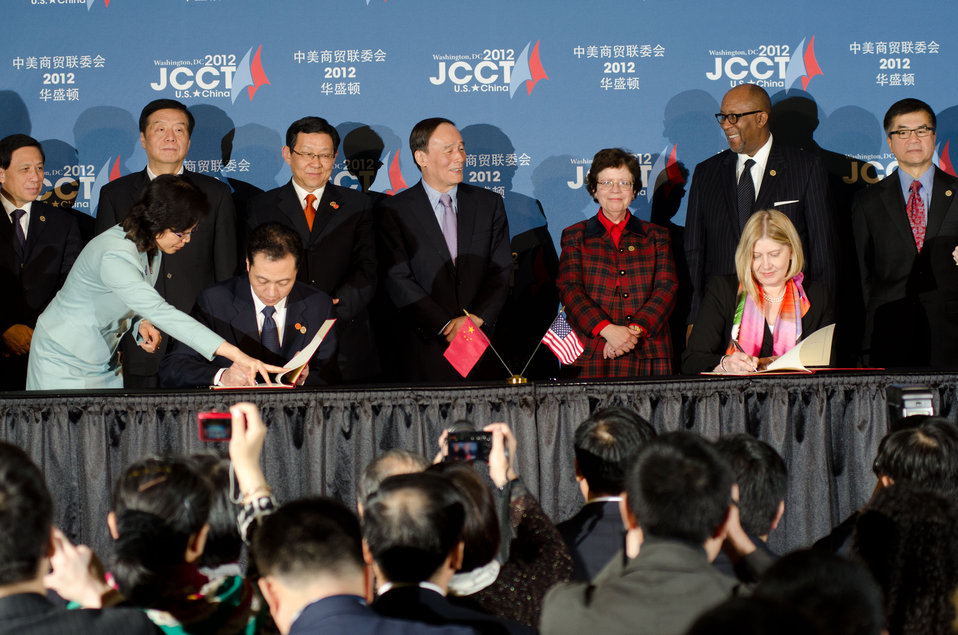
Chinese Ministry of Commerce Vice Minister Wang Chao (left) and U.S. Trade and Development Agency Acting Director Leocadia Zak (right) exchange the signed Memorandum of Understanding between the U.S. Trade and Development Agency and the Ministry of Commerce of the People’s Republic of China in Support of U.S.-China Trade Cooperation, with the support of with the support of principal leaders from the Chinese delegates and U.S. hosts, (L to R) China’s Ambassador to the U.S. Zhang Yesui, Vice Minister of Industry and Information Technology Liu Lihua, Chinese Minister of Commerce Chen Deming, Chinese Vice Premier Wang Qishan, Acting U. S. Commerce Secretary Rebecca Blank, U.S. Trade Representative Ron Kirk and U.S. Ambassador to China Gary Locke during a signing ceremony at the conclusion of the 23rd Session of the US-China Joint Commission of Commerce and Trade at the Andrew W. Mellon Auditorium in Washington, D.C. on Wednesday, Dec. 19, 2012. Supporting the signing is Chinese Vice Premier Wang Qishan (center). The JCCT holds high-level plenary meetings on an annual basis to review progress made by working groups that focus on a wide variety of trade issues. These working groups meet throughout the year to address topics such as intellectual property rights, agriculture, pharmaceuticals and medical devices, information technology, tourism, commercial law, environment, and statistics.